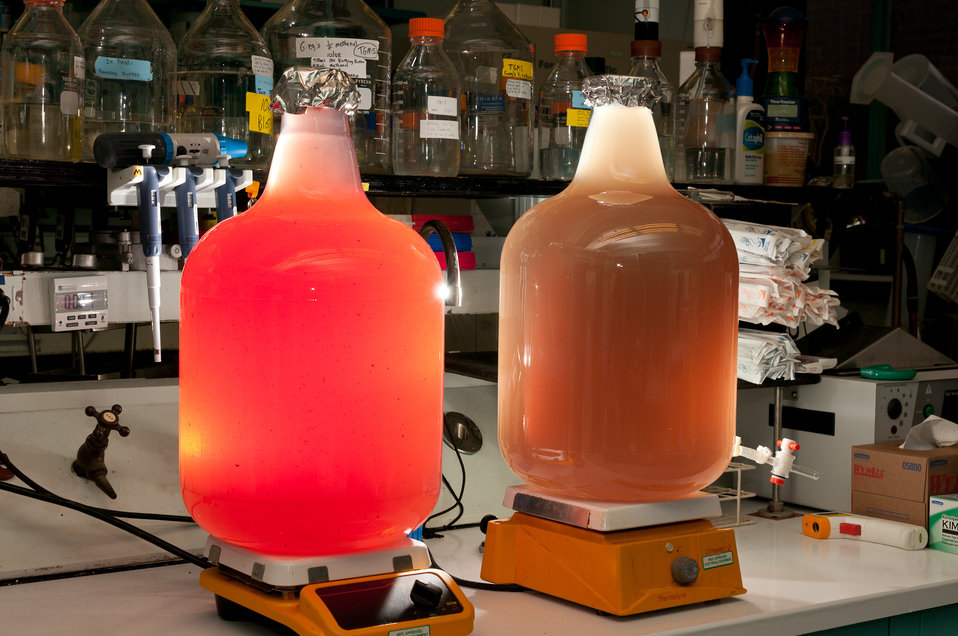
Argonne National Laboratory's the photosynthetic bacteria within the Endurance Biofuel Reactor efficiently convert waste from kitchens or latrines into long-chain alcohols.
Once separated from the fermentation broth, these serve as surrogates for diesel fuel that can be used alone or in blends to power vehicles or generators.